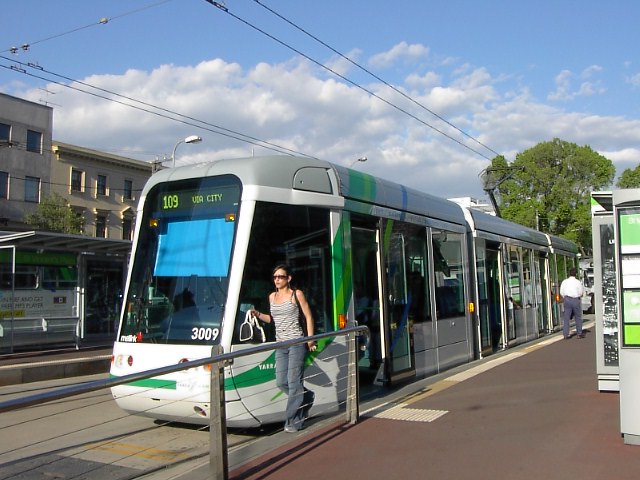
Citadis in Melbourne, Australia.